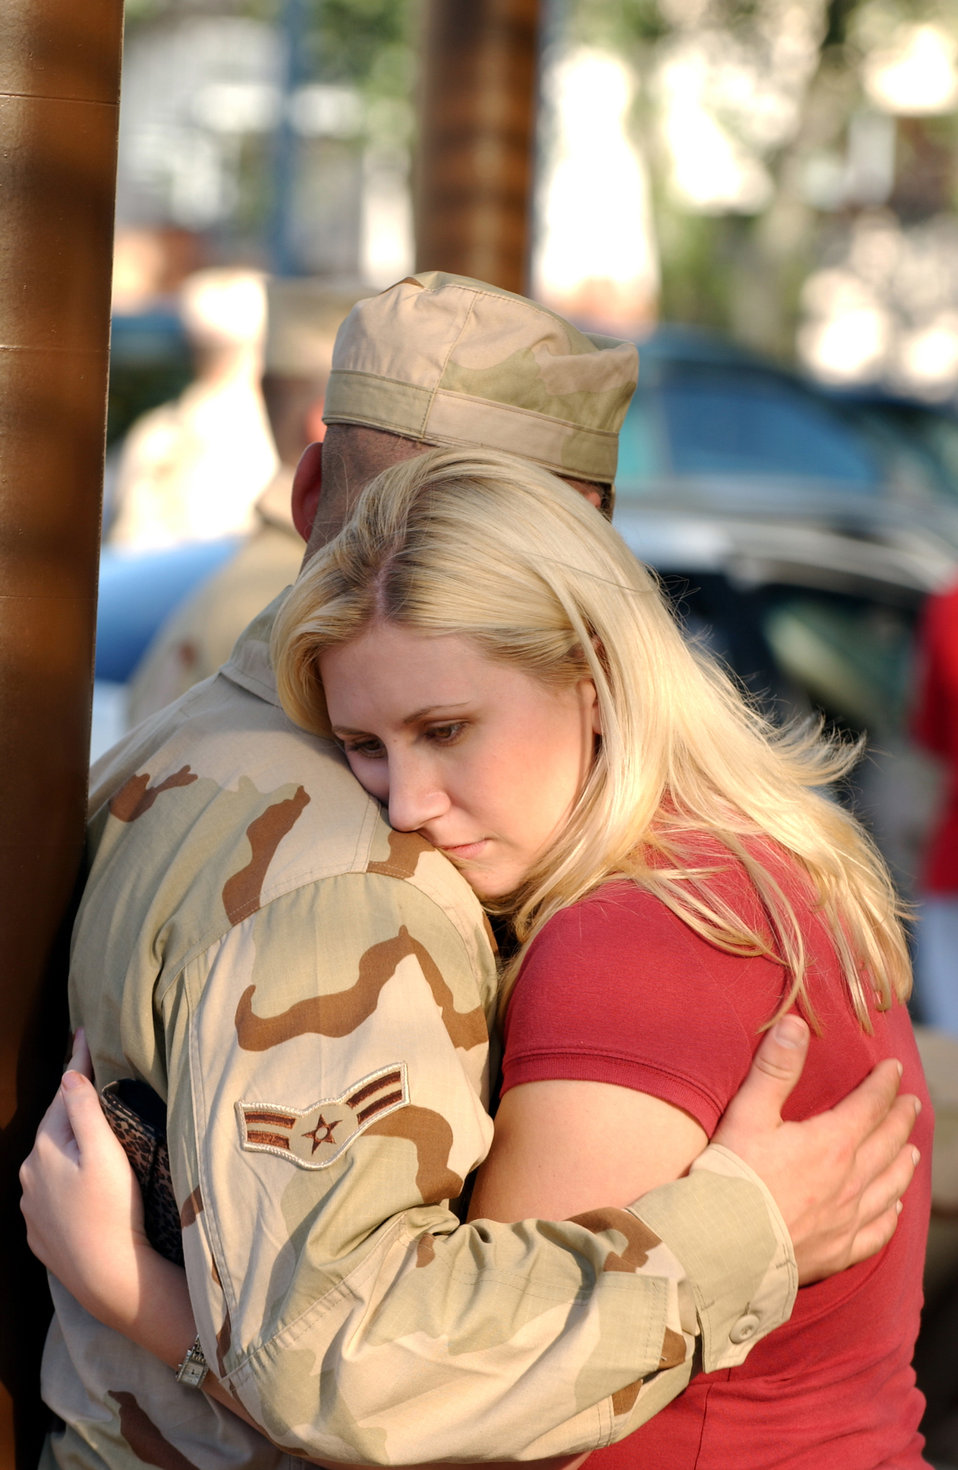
One last goodbye

RAMSTEIN AIR BASE, Germany -- Austin Gosur embraces her husband Airman 1st Class Adam Gosur as he departs for a deployment here Sept. 9. Airman Gosur is assigned to the 568th Security Forces Squadron.